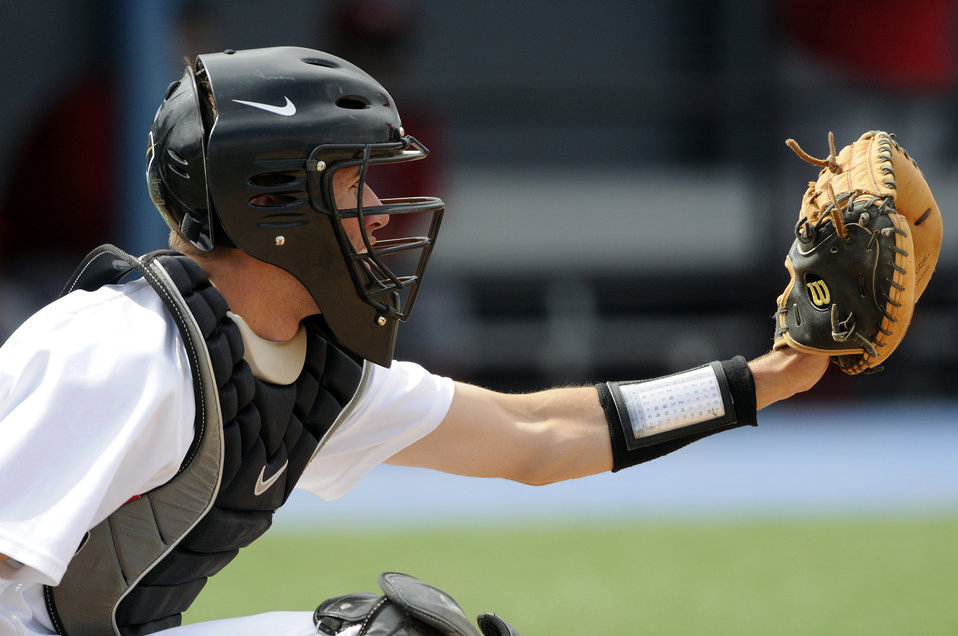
Baseball season ender

Air Force Academy freshman catcher Jack Lupo awaits the pitch May 15 during a two-game series with the New Mexico Lobos. The Academy Falcons finished the season with a 14-37 overall record.